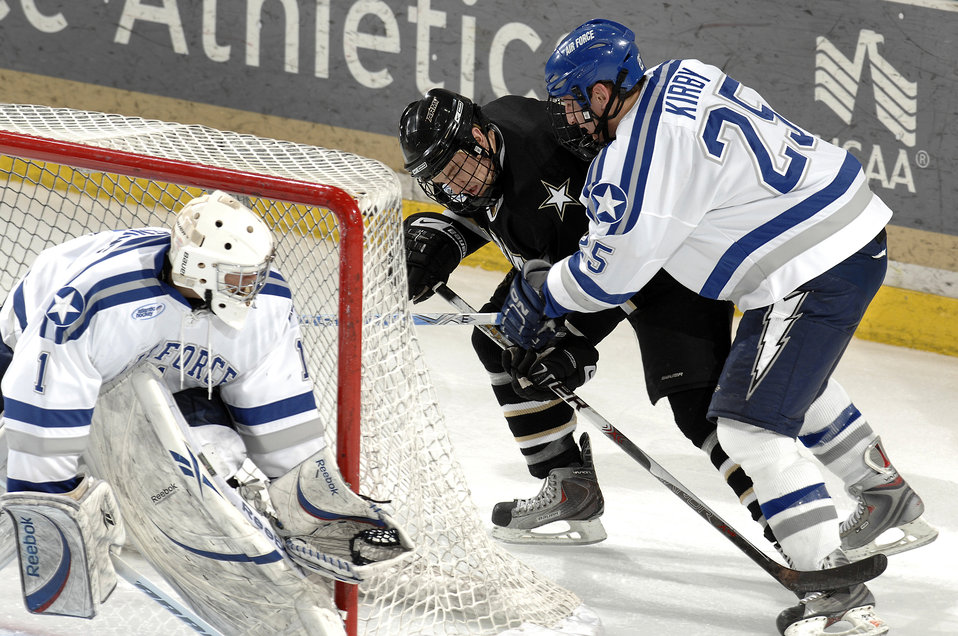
Air Force beats Army Black Knights

Falcon defenseman sophomore Tim Kirby battles behind the net as Air Force defeated Army 3-0 at the U.S. Air Force Academy's Cadet Ice Arena March 12, 2010. Air Force went on to win the best-of-three series, advancing to the Atlantic Hockey Association Final Four against Sacred Heart March 19.